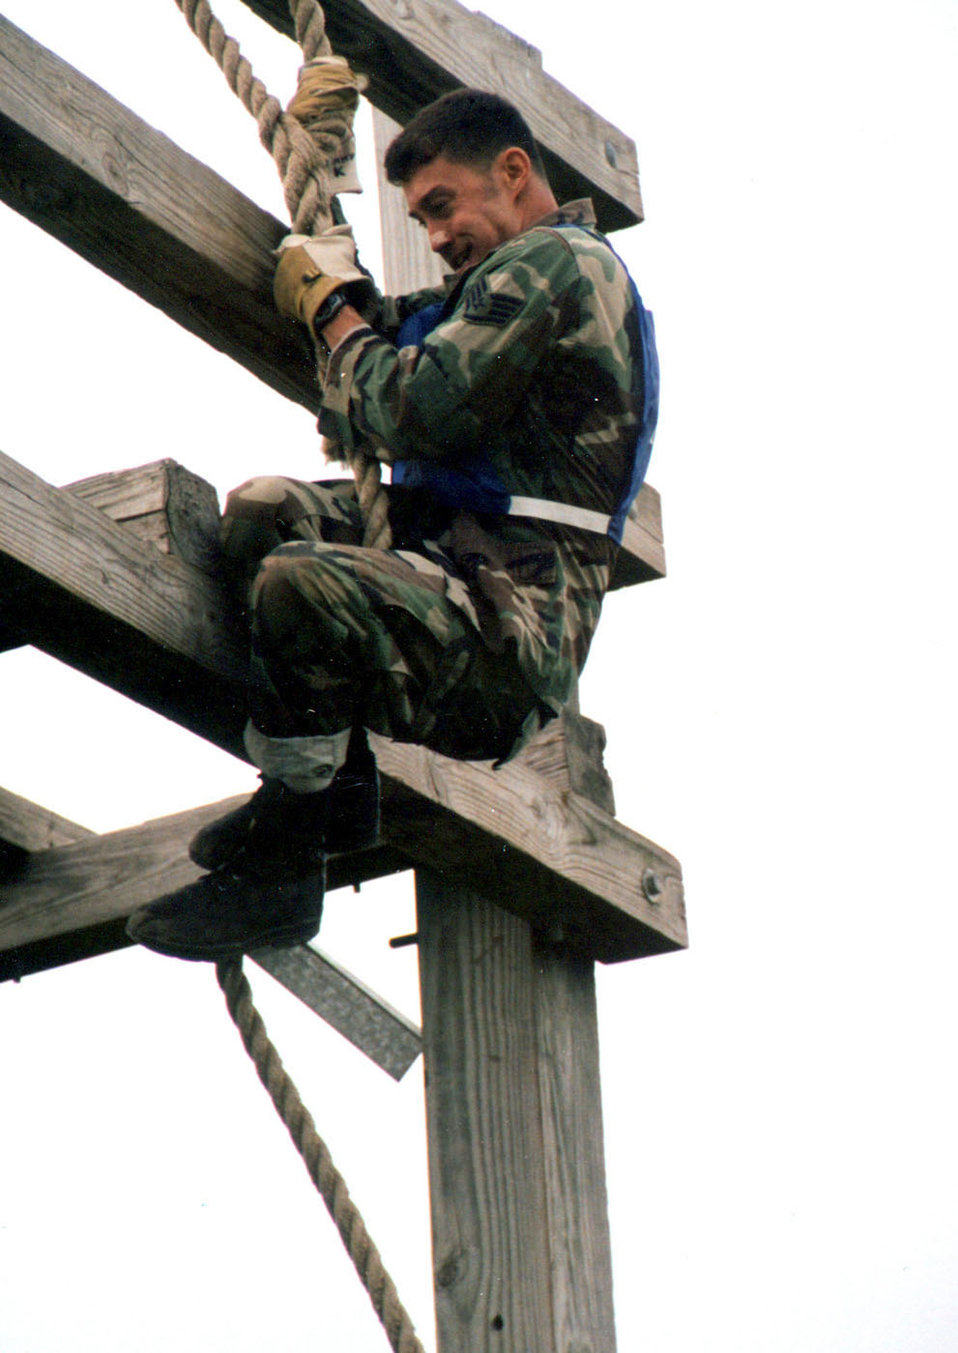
Slide!

LACKLAND AIR FORCE BASE, Texas -- Staff Sgt. Steven Fox, an Air National Guard Defender Challenge team member, slides down the